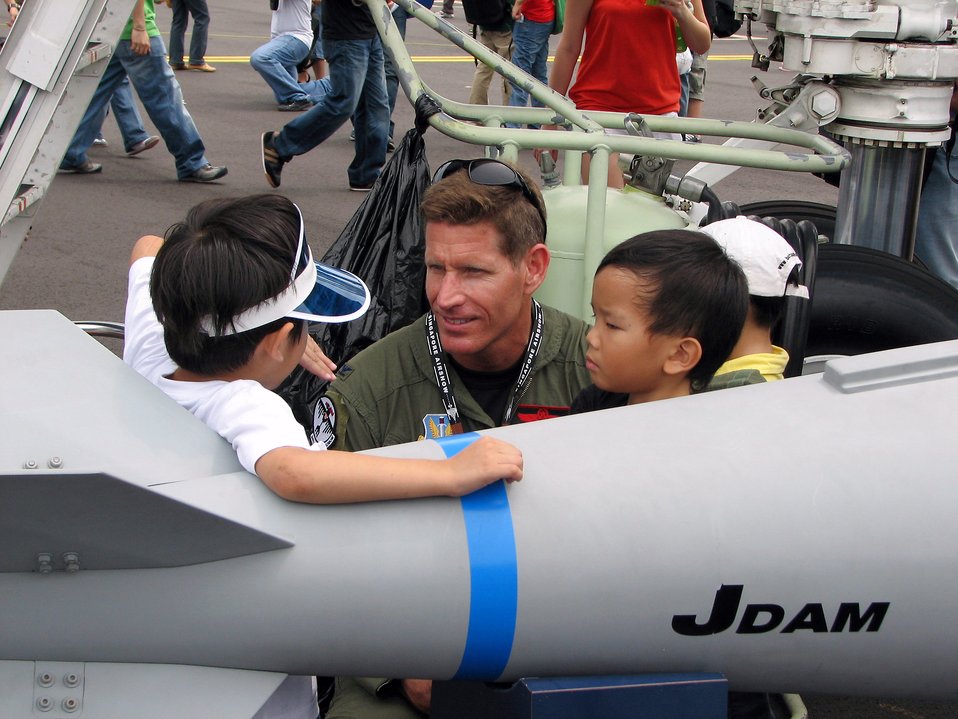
American airpower on display

Col. Pete Castor speaks with children during a public day at the Singapore Air Show Feb. 23. The 28th Bomb Wing at Ellsworth Air Force Base, S.D., provided a B-1B Lancer for static display and aircrews flew the bomber nonstop from Ellsworth AFB to Singapore. Colonel Castor is the vice commander of the 28th Bomb Wing.